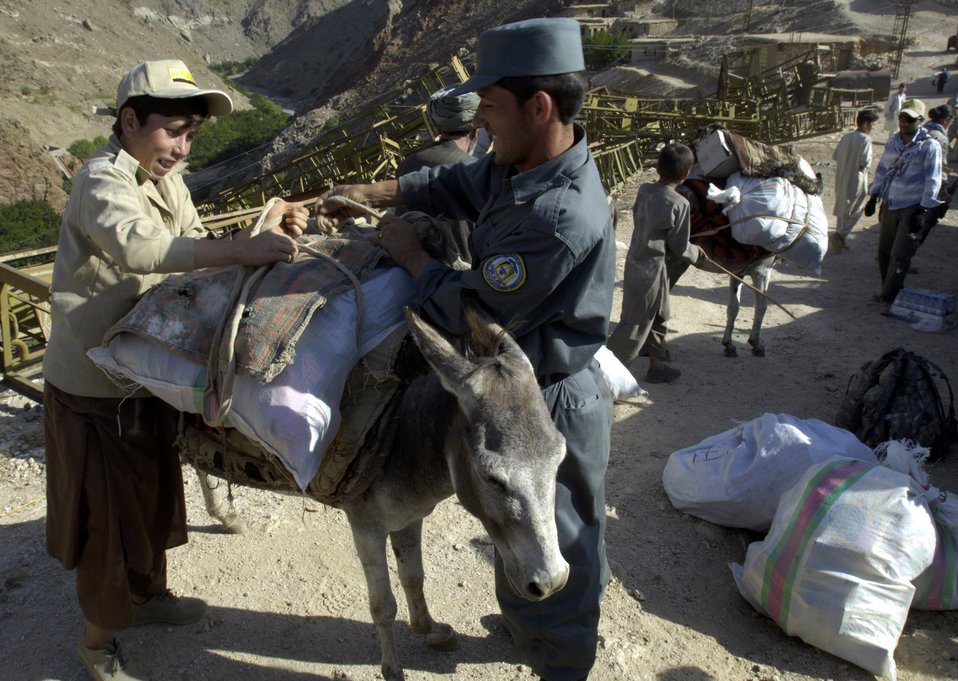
Airmen trek over mountains to deliver aid in Afghanistan

A village boy and a member of the Afghan National Police load a donkey with medical supplies and humanitarian aid for members of the Panjshir Provincial Reconstruction Team Aug. 7 in Afghanistan. The PRT members made an 11-mile round-trip trek over a mountain pass and into a river valley to provide medical care to Afghans living in Roydara village in the Shutol district of Panjshir province.